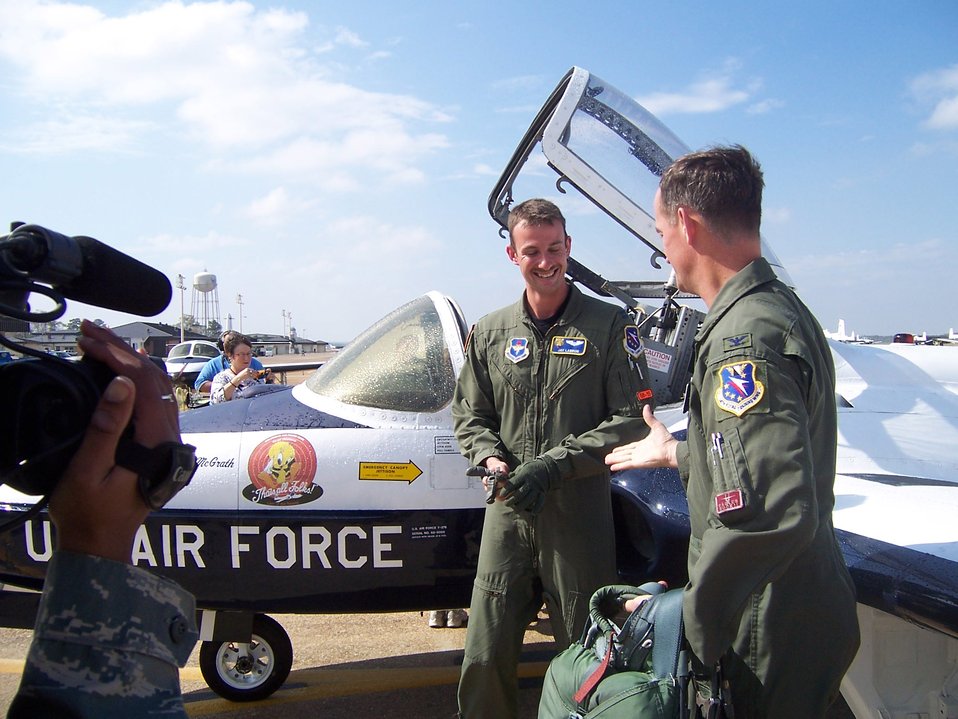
Tweet complete: T-37 retires after 39 years of service

Capt. Jay Labrum (left) is congratulated by Col. Dave Gerber after completing the final T-37 Tweet student training sortie March 31 at Columbus Air Force Base, Miss. The T-37 is being replaced by the T-6 Texan II. The T-37 was officially retired from Columbus AFB Specialized Undergraduate Pilot Training during a ceremony April 3. Captain Labrum is a member of Specialized Undergraduate Pilot Training Class 08-15. Colonel Gerber is the 14th Flying Training Wing commander.